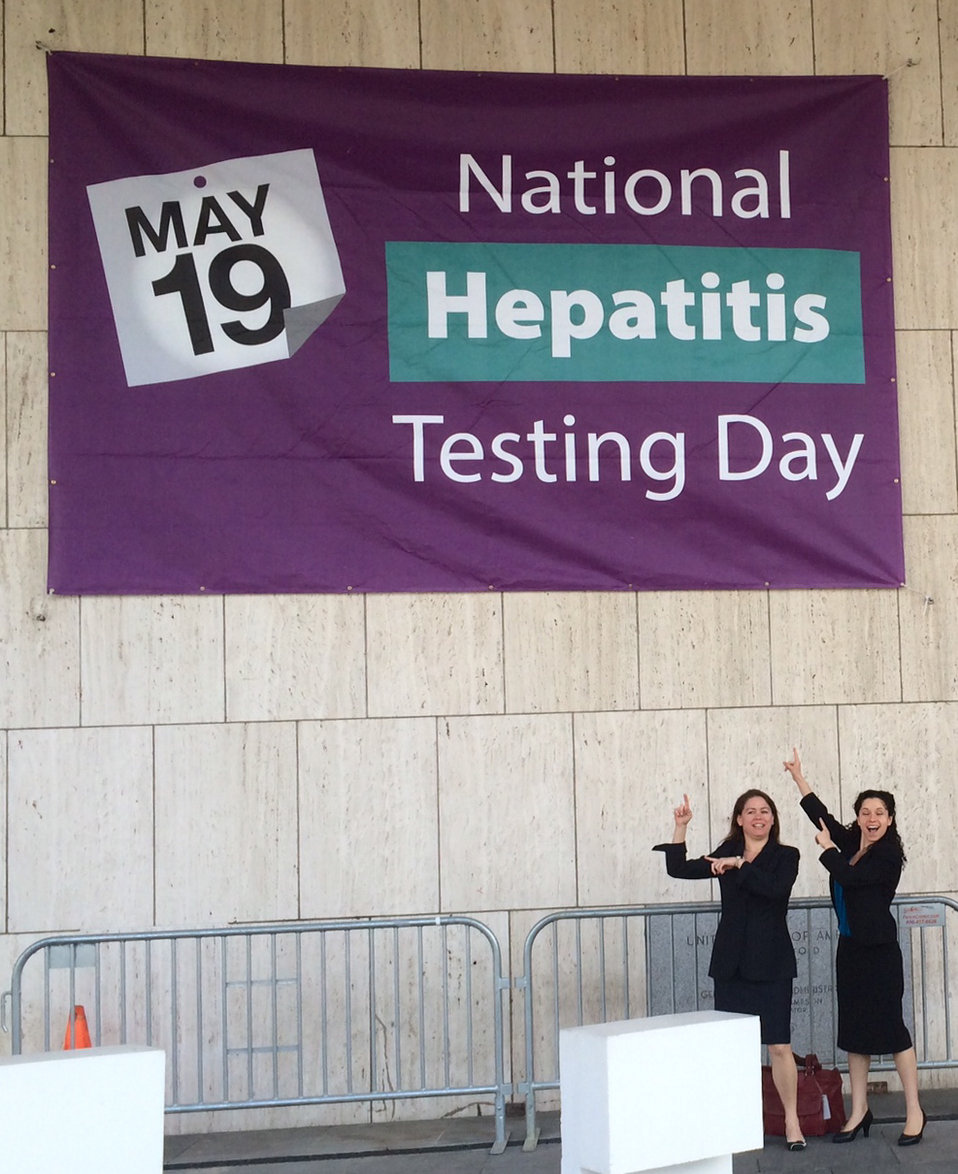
14 0519 HepTestingDay